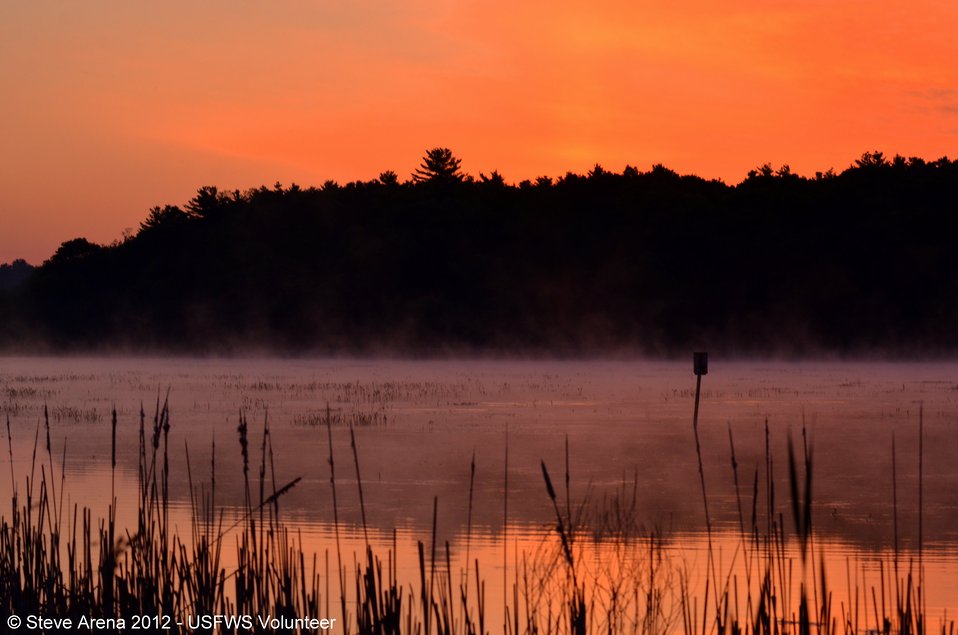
Sunrise at Great Meadows NWR, Concord, MA

Credit: Steve Arena/USFWS

20 May 2012